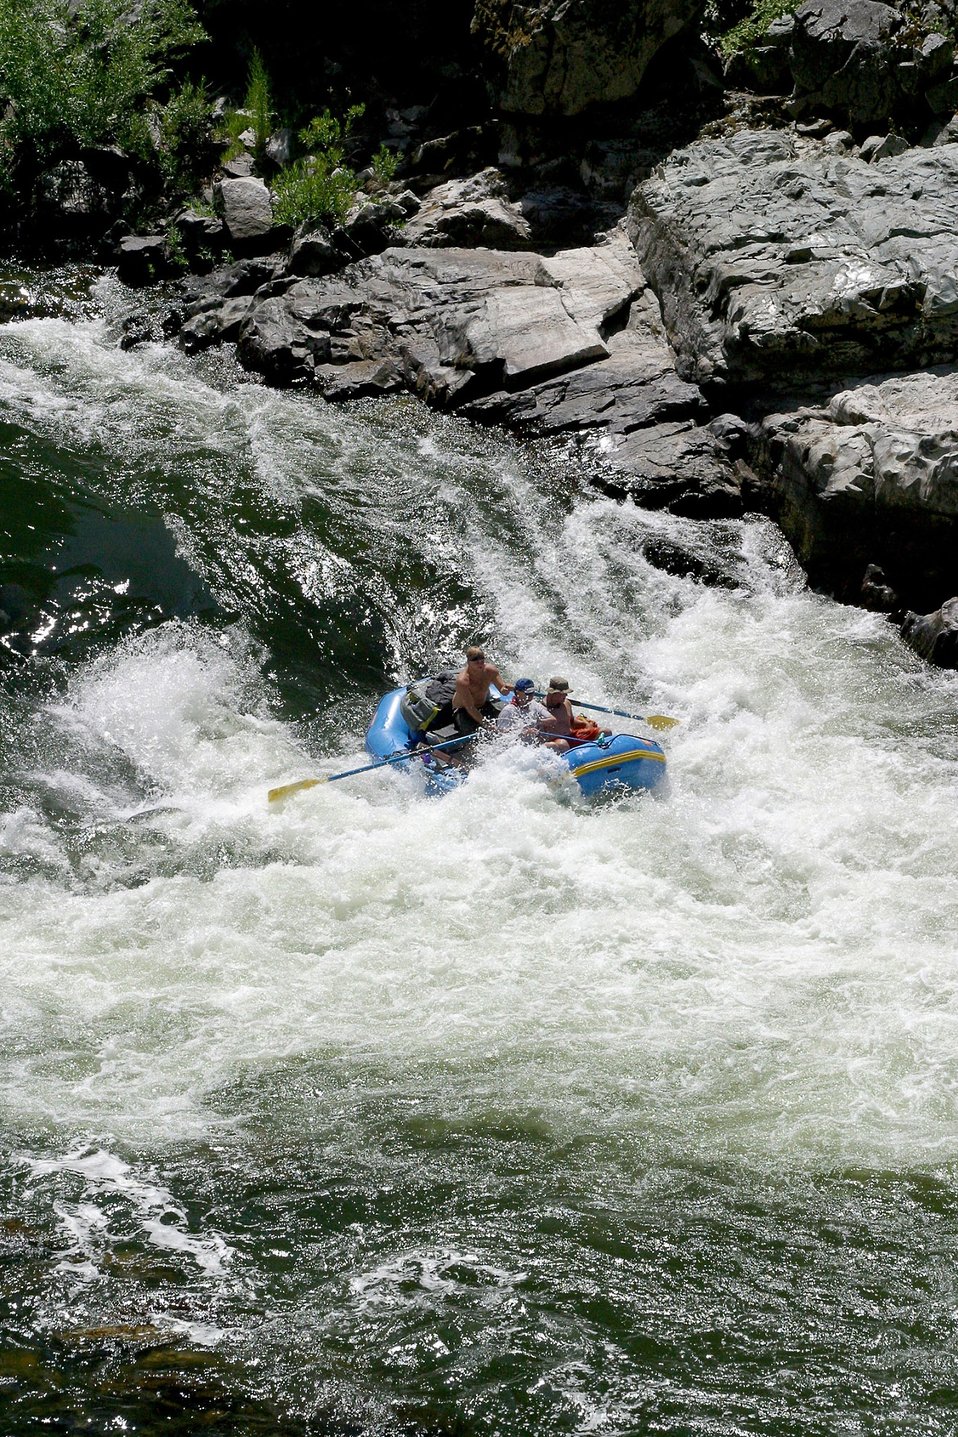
Boater at Grave Creek Falls